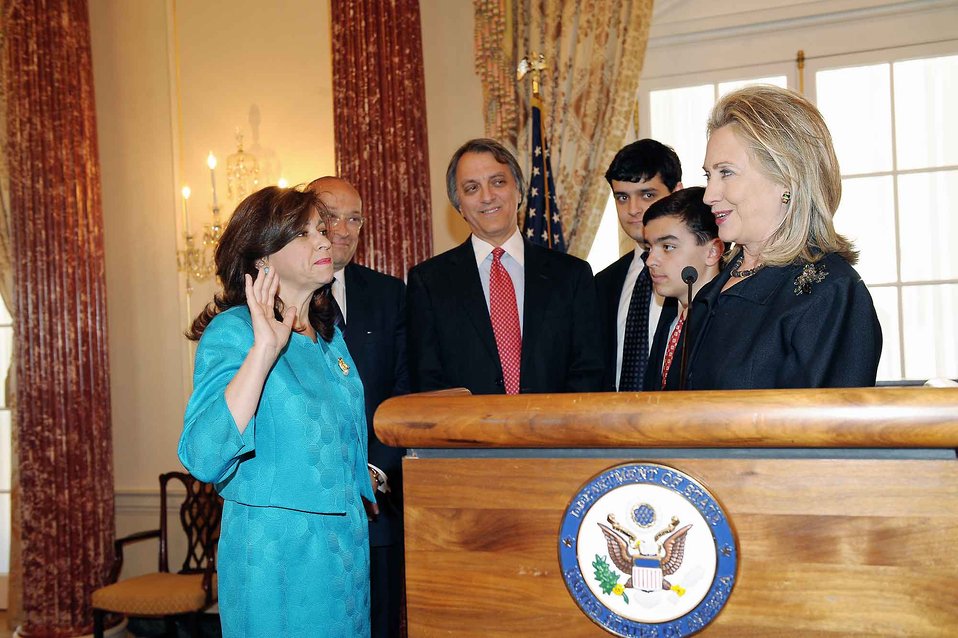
Under Secretary Sonenshine Swearing-In Ceremony

U.S. Secretary of State Hillary Rodham Clinton administers the oath of office during the swearing-in ceremony for U.S. Under Secretary of State for Public Diplomacy and Public Affairs Tara Sonenshine at the U.S. Department of State in Washington, D.C., April 24, 2012.